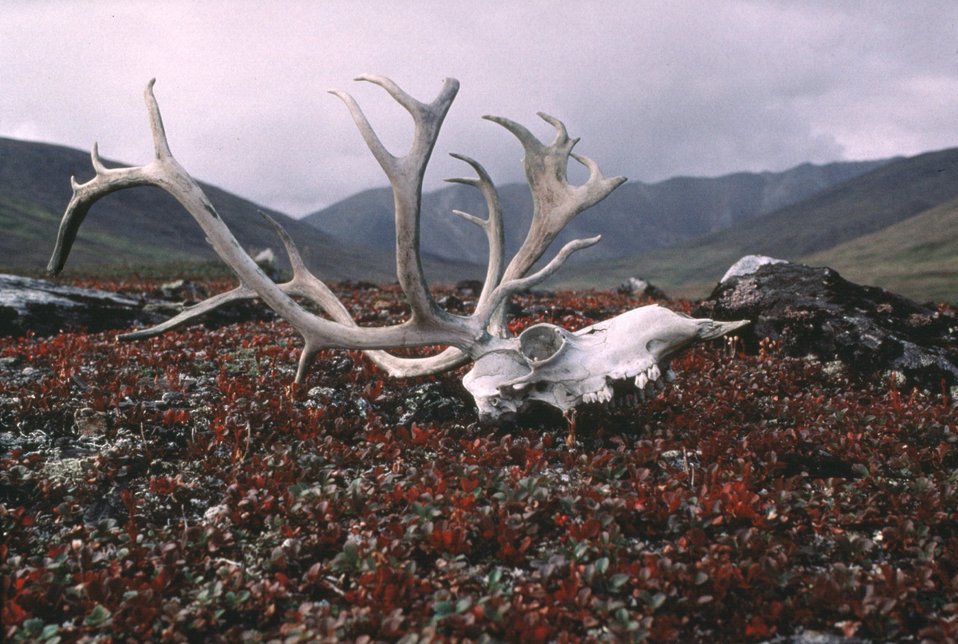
Caribou skull on tundra, Seward Peninsula